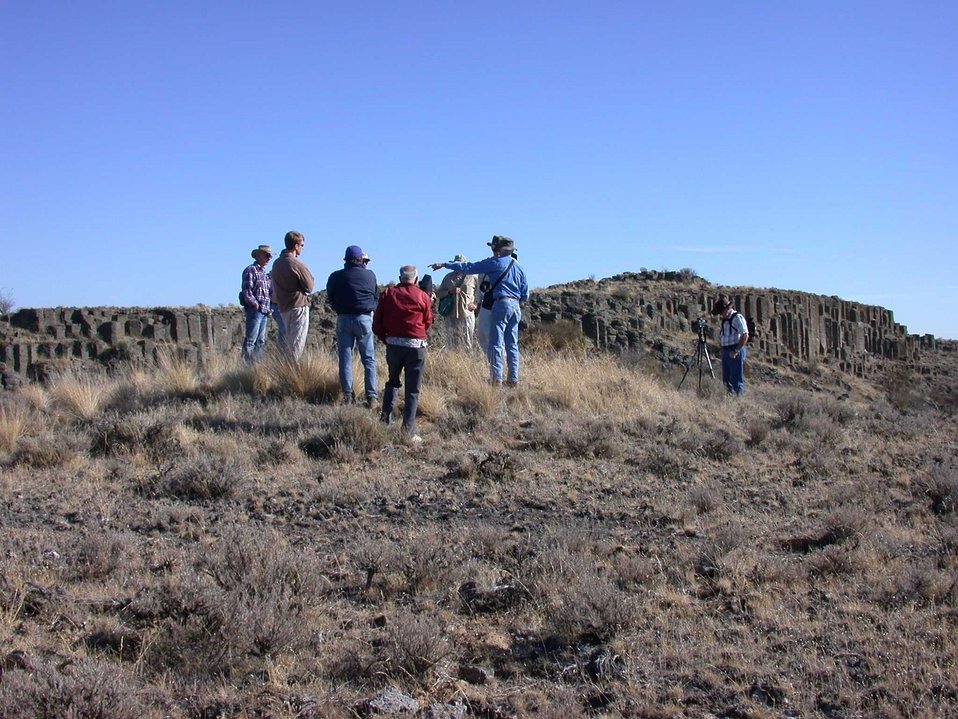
Public Lands Day Sprague geologic tour of columnar basalt ridge in Lake Missourla Flod Channels.